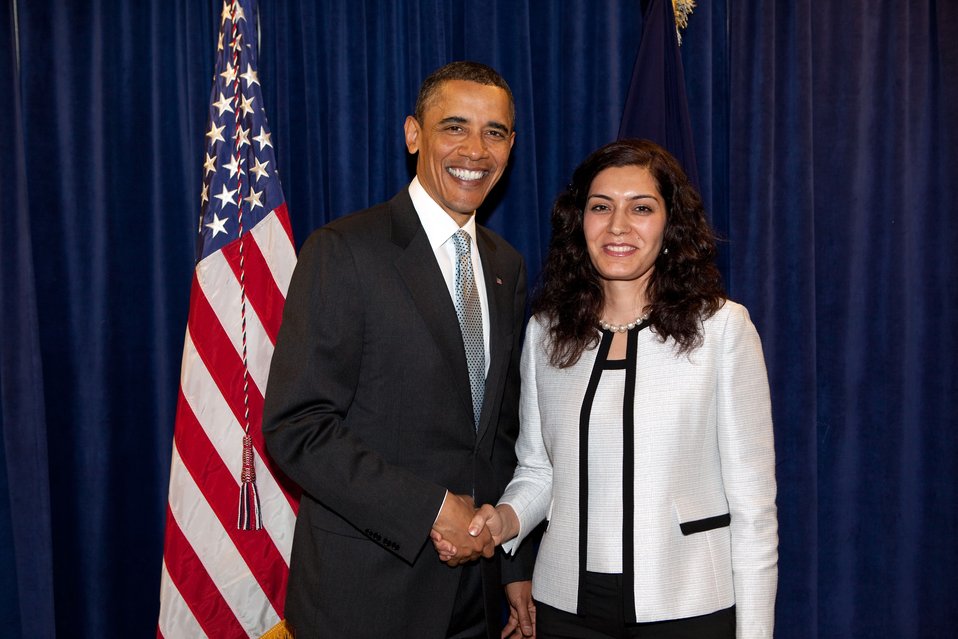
President Obama greets Andeisha Farid of Afghanistan

U.S. President Barack Obama greets Andeisha Farid of Afghanistan at the Presidential Summit on Entrepreneurship. She is the Executive Director of the Afghan Child Education and Care Organization which runs 10 orphanages in Afghanistan and Pakistan.